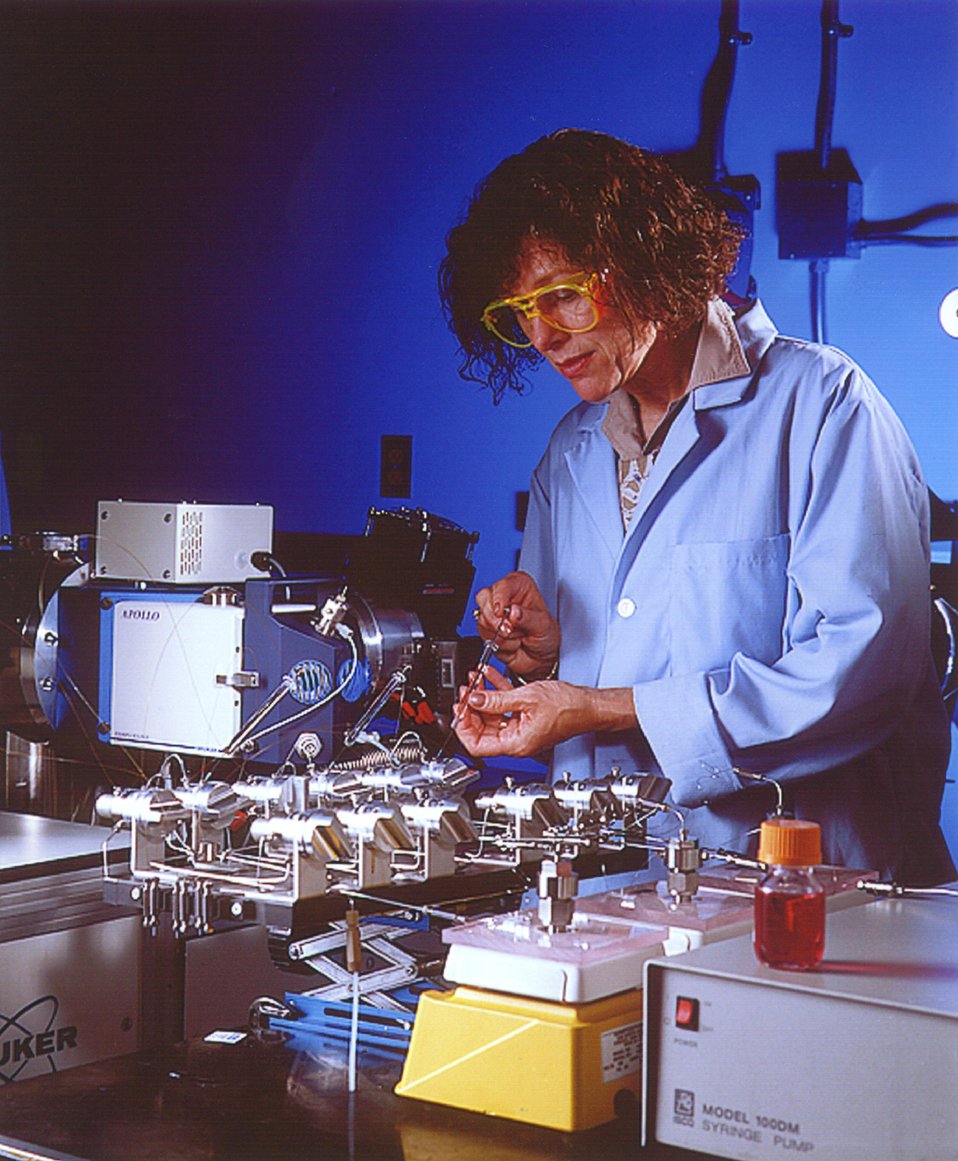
PNNL SCIENTIST WORKING AT PNNL'S TESLA FOURIER TRANSFORM ION CYCLOTRON MASS SPECTROMETER.

THE 9.4 TELSA FOURIER TRANSFORM ION CYCLOTRON MASS SPECTROMETER AT PNNL MEASURES PEPTIDES BY THEIR MASS. THE FTICR IS CURRENTLY THE MOST POWERFUL, COMMERCIALLY AVAILABLE MASS SPECTROMETER. IDENTIFYING PEPTIDES IS AN IMPORTANT PART OF PROTEOMICS RESEARCH TO DETERMINE THE ROLE PROTEINS PLAY IN CELLS AND LIVING SYSTEMS. MORE THAN A MILLION PEPTIDES ARE AVAILABLE IN THE PROTEINS EXPRESSED WITHIN HUMAN CELLS.